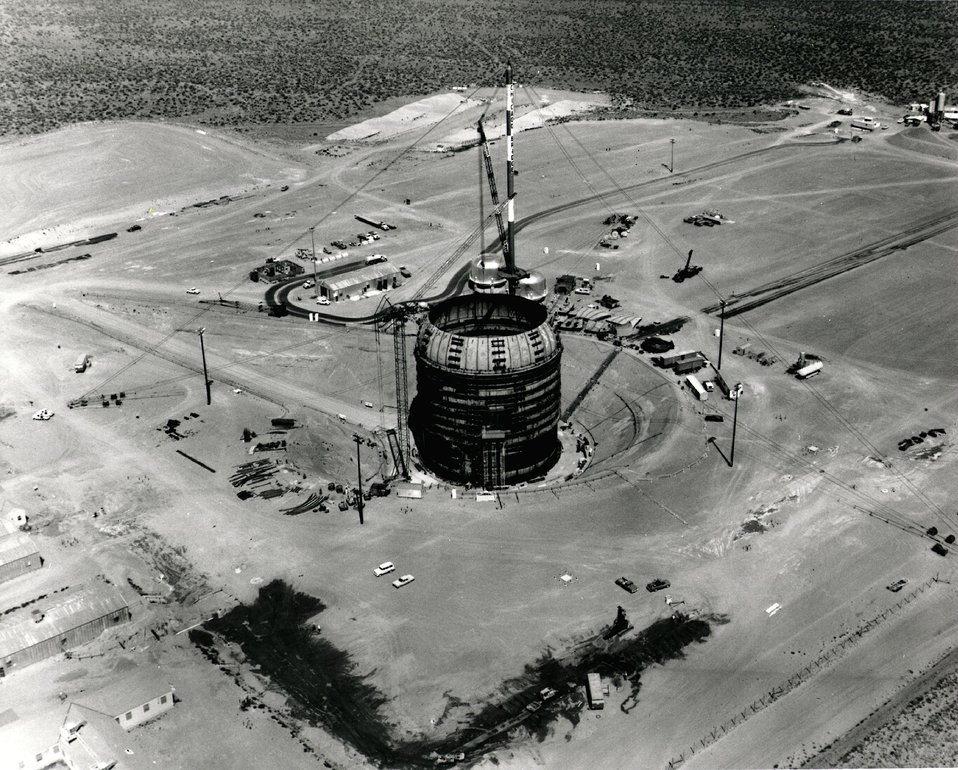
The Fast Flux Test Facility containment vessel, under construction, is being capped off with rounded steel plates. c. 1972.